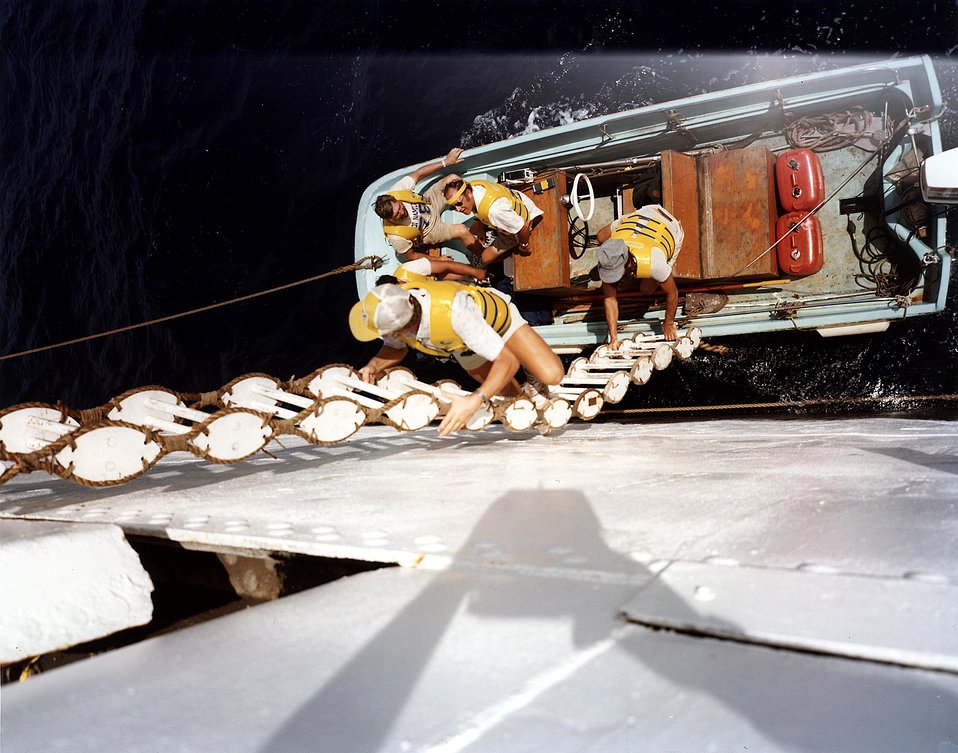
Construction activities at the Joseph M. Farley Power Plant.